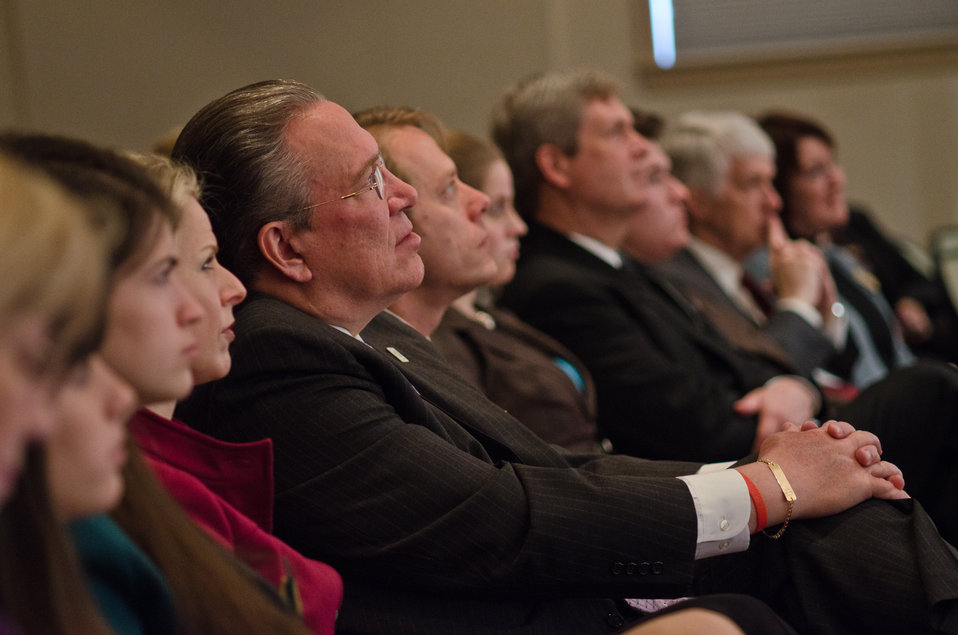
National 4-H Council President Dr. Don Floyd (with glasses) and others had all their attention on Department of Education Secretary Arne Duncan who spoke to approximately 300 youths from 47 states or territories and Canada at the National 4-H Conference on Tuesday, April 5, 2011 in Washington, DC. U.S. Department of Agriculture (USDA) Secretary Tom Vilsack (fourth from right) also spoke. The conference is the premier youth development opportunity of the USDA. Aged between 15-19 years old the attendees were selected by various means by their states to be delegates to the conference. The Secretaries then took questions from the audience. Secretary Vilsack received questions on topics such as land grants, what is an average day for him, and both talked of their goals to have 1,000 new farmers and 1,000 new educators.